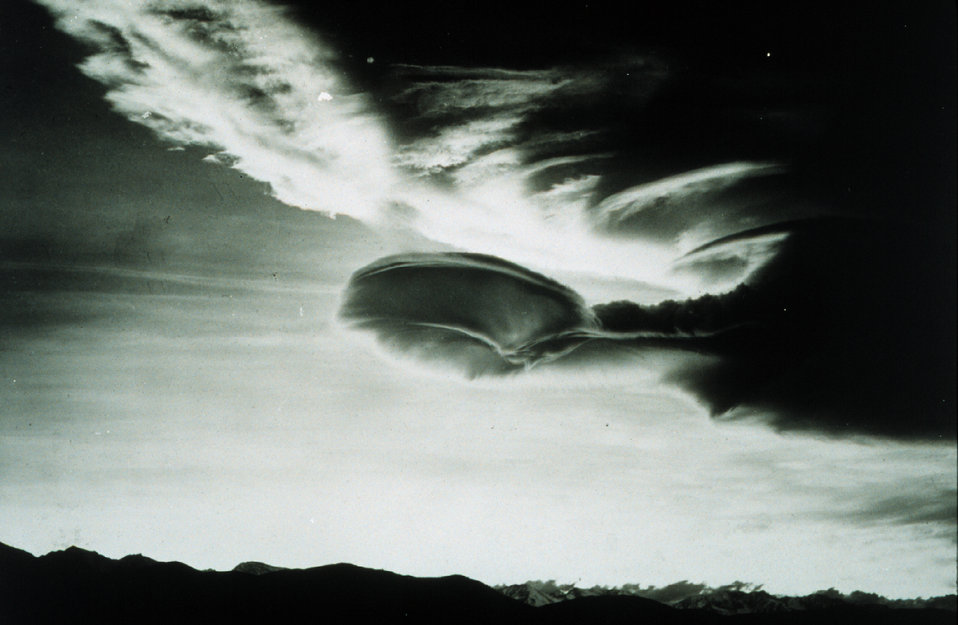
Cumulus Lenticularis - a remarkable roll cloud over the Sierras Formed by the Sierra Wave north of Independence, California Strong updrafts associated with this cloud type